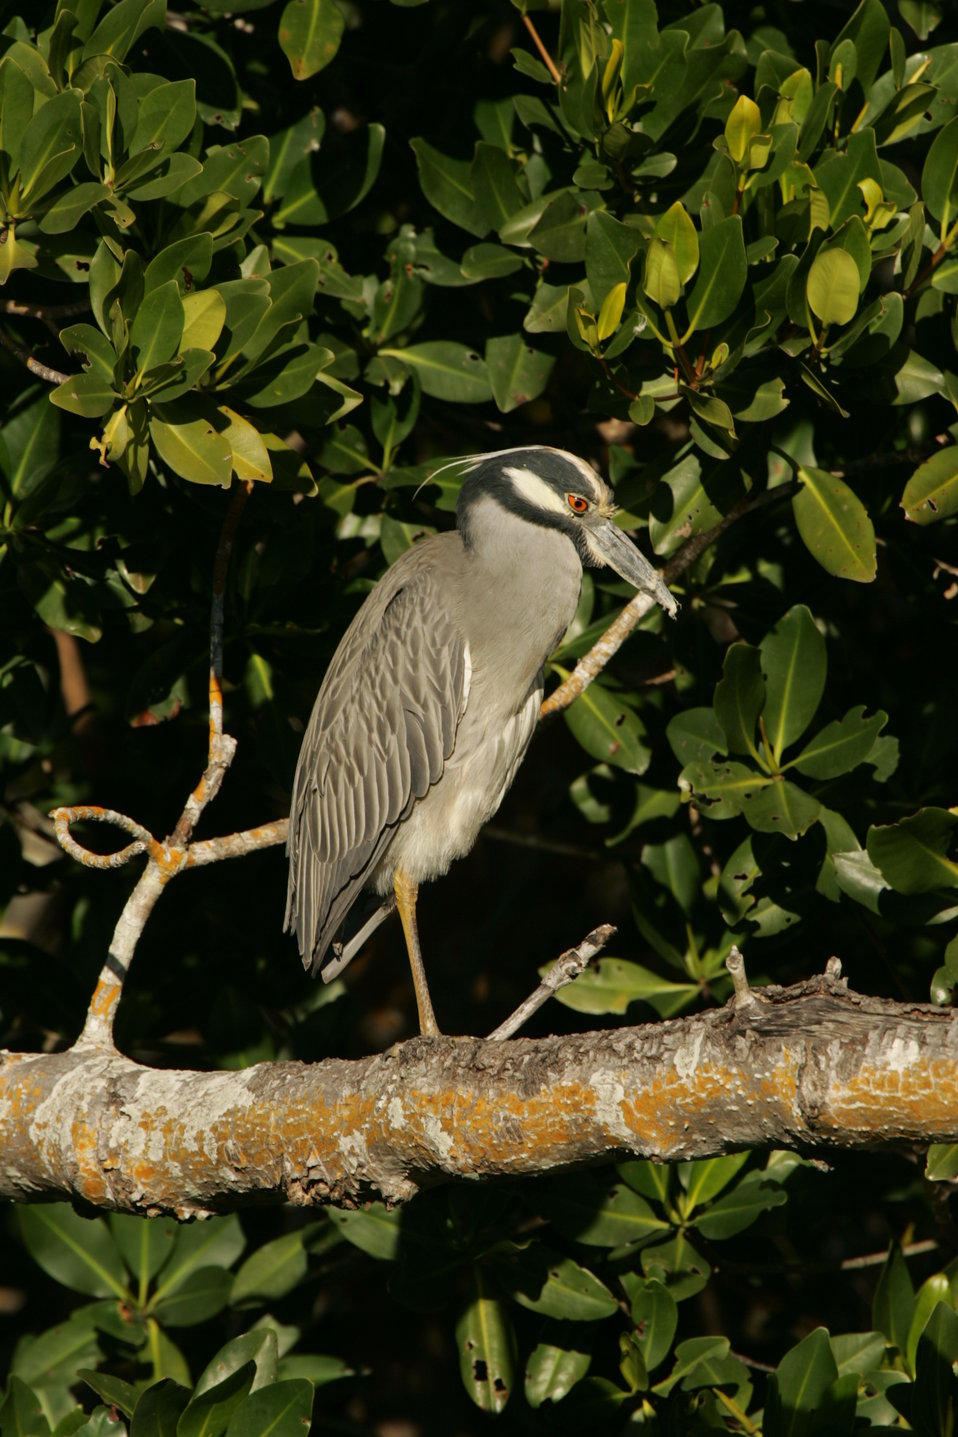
Yellow-crowned Night-Heron, J.N. 'Ding' Darling NWR